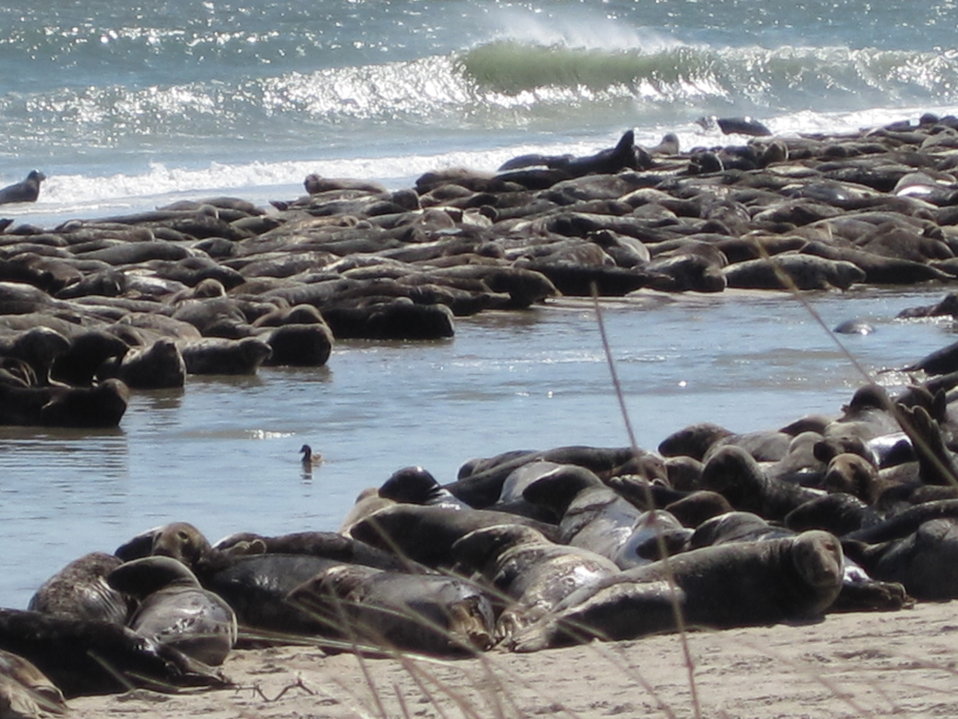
Seals on South Monomoy Island

Seals gather on South Monomoy Island, a few hundred yards from the lighthouse.

Credit: Keith Shannon/USFWS

Monomoy National Wildlife Refuge is part of the Eastern Massachusetts National Wildlife Refuge Complex.